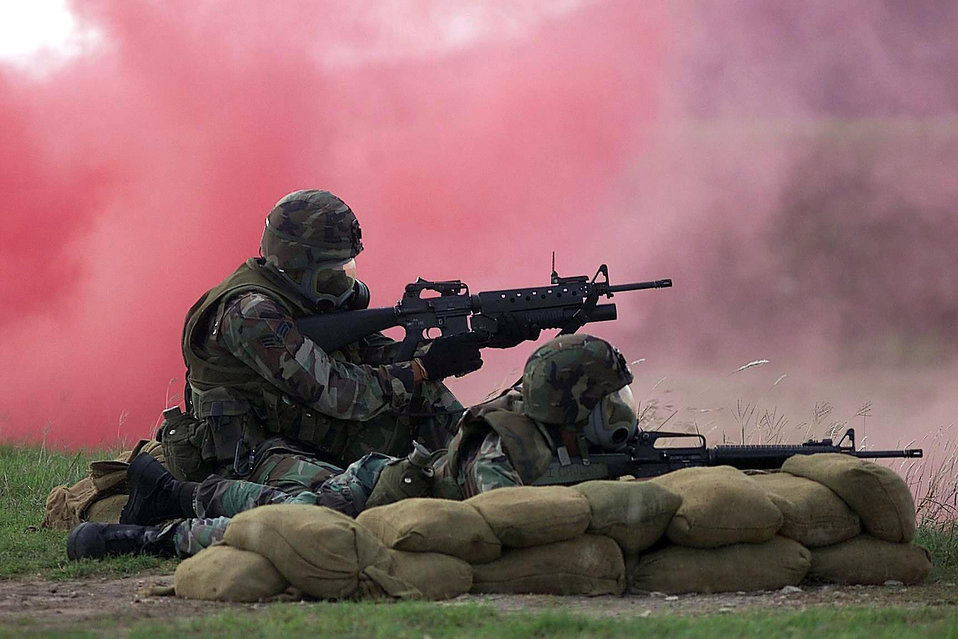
Under fire

CAMP BULLIS, Texas -- After donning the appropriate chemical protective gear, Airman 1st Class Vincent Ouchana and Senior Airman Efrain Espinoza, representing Air Force Space Command, fire downrange and engage pop-up targets during the combat weapons event here. Defender Challenge is the annual Air Force-wide competition showcasing the talents and capabilities of 13 international security forces teams in seven physical fitness, base defense and policing skills.